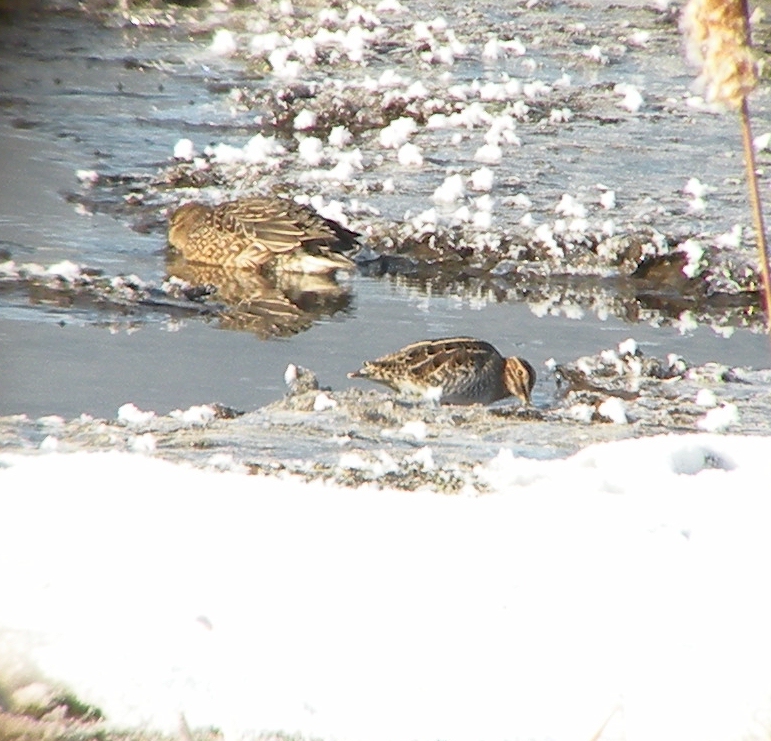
Wilson's Snipe

A late migrant or wintering snipe feeding in warm water spring discharge site on Lee Metcalf National Wildlife Refuge in Montana.